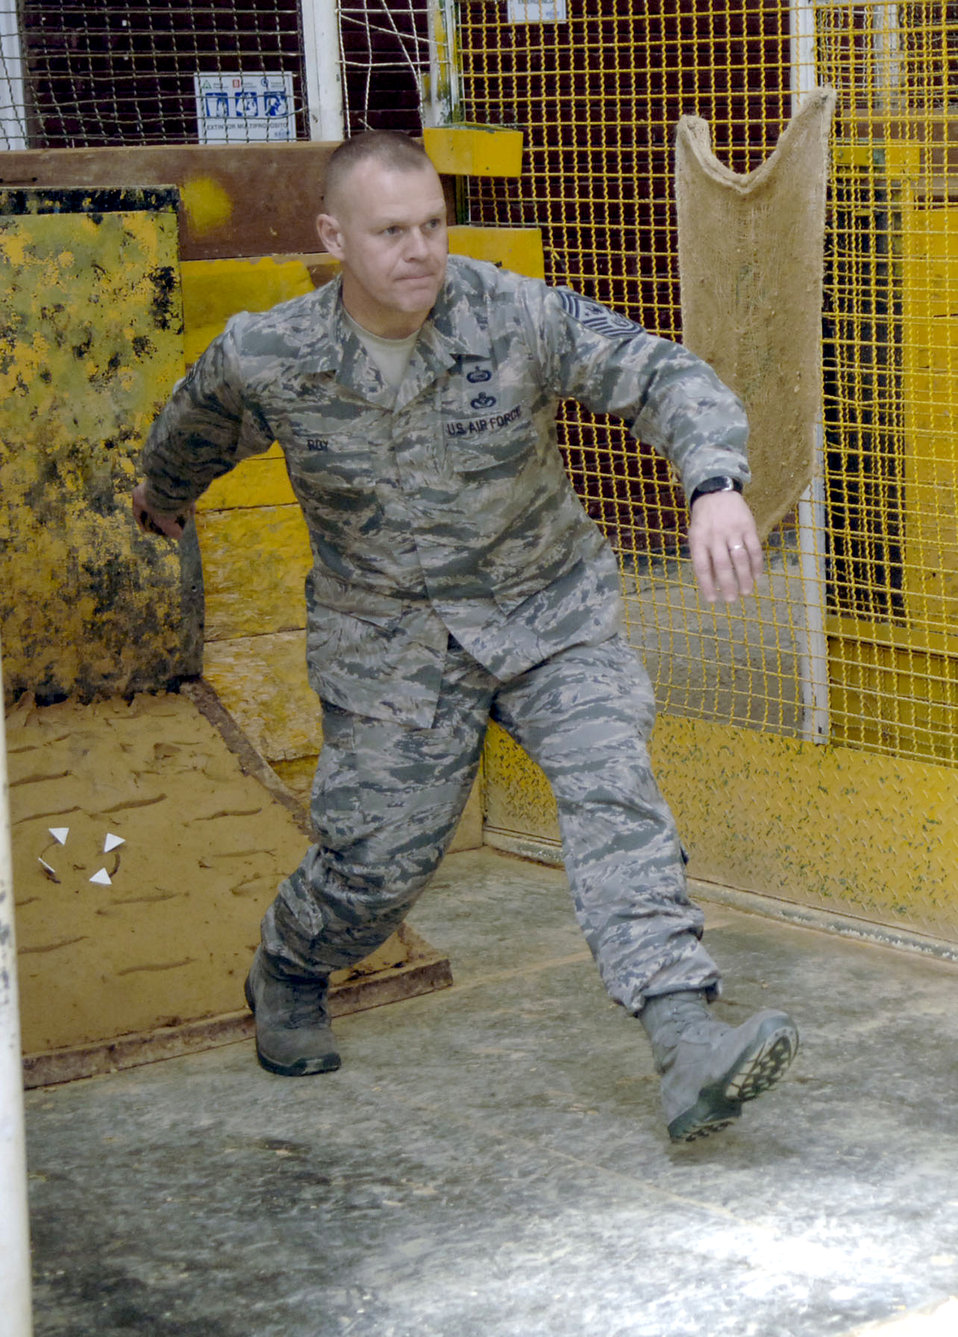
Chief Roy

Chief Master Sgt. of the Air Force James A. Roy competes in a game of